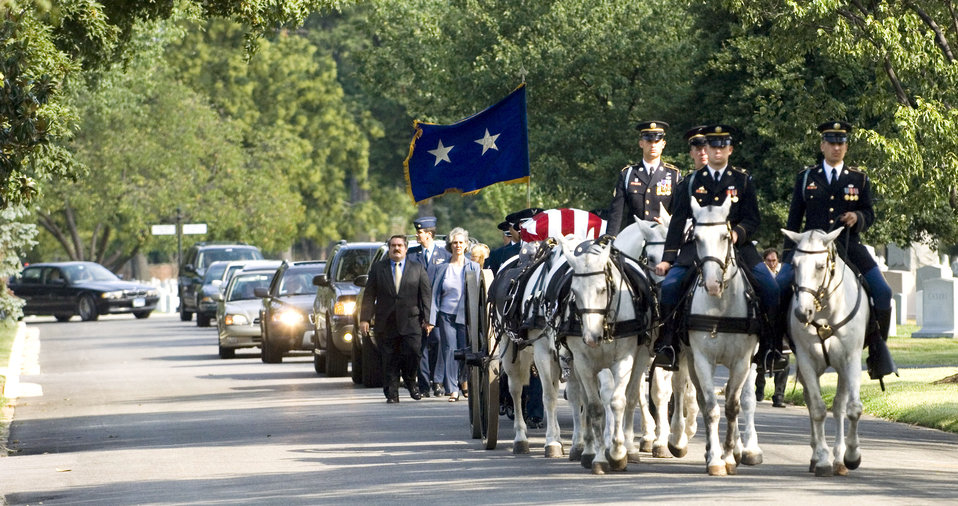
Military pays tribute to World War II bomber pilot

An Army caisson leads a funeral procession for retired Maj. Gen. Jack I. Posner to his final resting place at Arlington National Cemetery on Aug. 11. General Posner was among the last bomber pilots to have served in World War II.